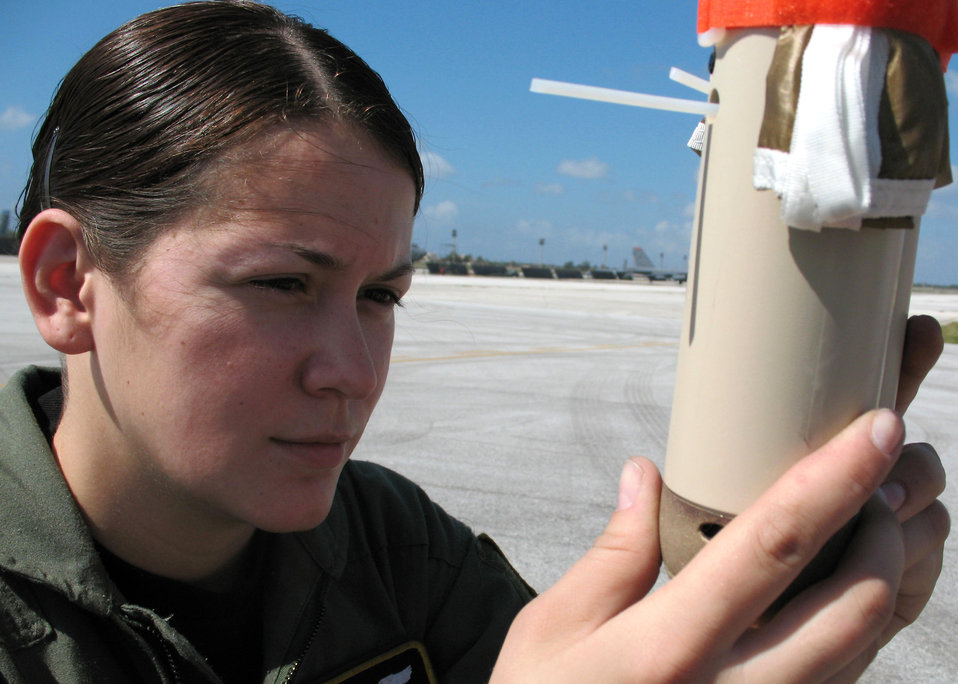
GPS-driven drop sondes improves airdrop accuracy

Airman 1st Class Lucy Ramos examines a drop sondes March 24 during a training mission at Andersen Air Force Base, Guam. Drop sondes use Global Positioning System technology to help aircrews make airdrops more accurate. Airman Ramos is a loadmaster with the 36th Airlift Squadron at Yokota Air Base, Japan.